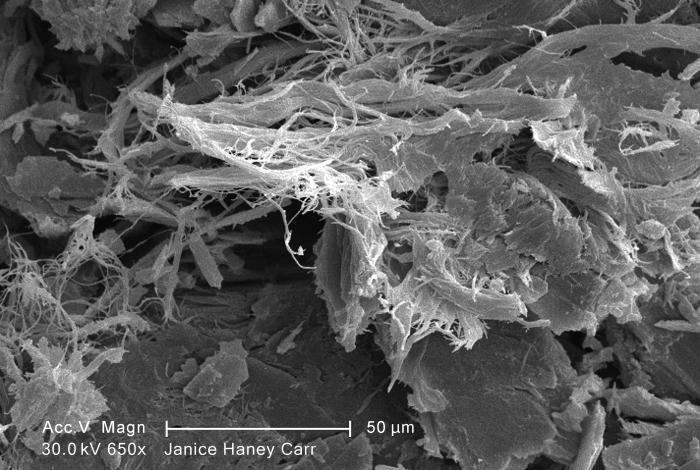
Under a moderate magnification of 650X, this scanning electron micrograph (SEM) revealed some of the microcrystalline ultrastructure exhibited by a piece of raw chrysotile, or white asbestos, which had been excavated from the Lowell Asbestos Mine on Belvidere Mountain, Vermont.